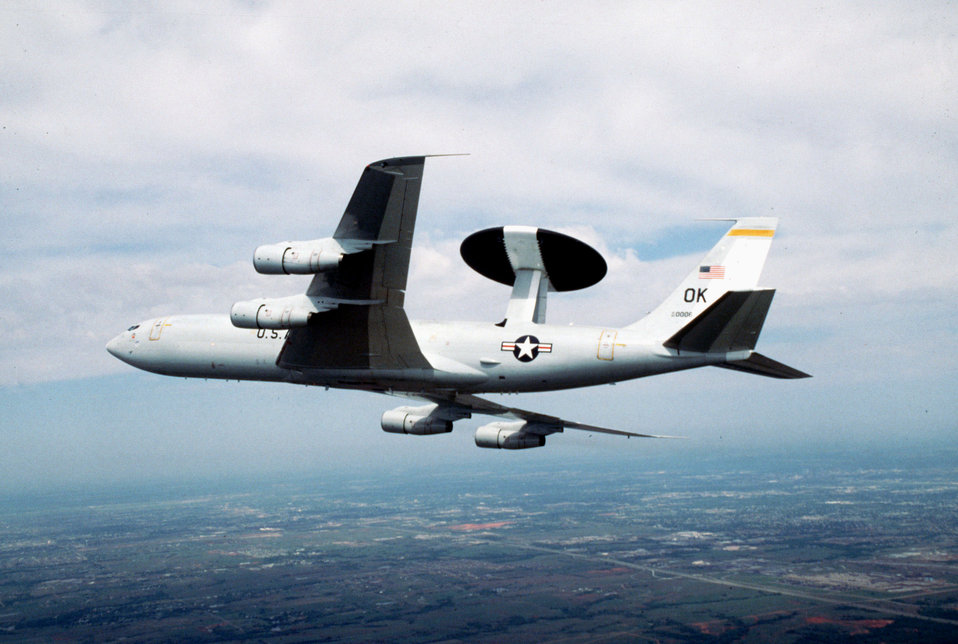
AWACS

FILE PHOTO -- An E-3 Airborne Warning and Control System aircraft from Tinker Air Force Base, Okla., flies a mission. The E-3 Sentry is modified Boeing 707/320 commercial airframe with a rotating radar dome. The dome is 30 feet in diameter, 6 feet thick and is held 11 feet above the fuselage by two struts. It contains a radar subsystem that permits surveillance from the Earth's surface up into the stratosphere, over land or water. The radar has a range of more than 200 miles for low-flying targets and farther for aerospace vehicles flying at medium to high altitudes.